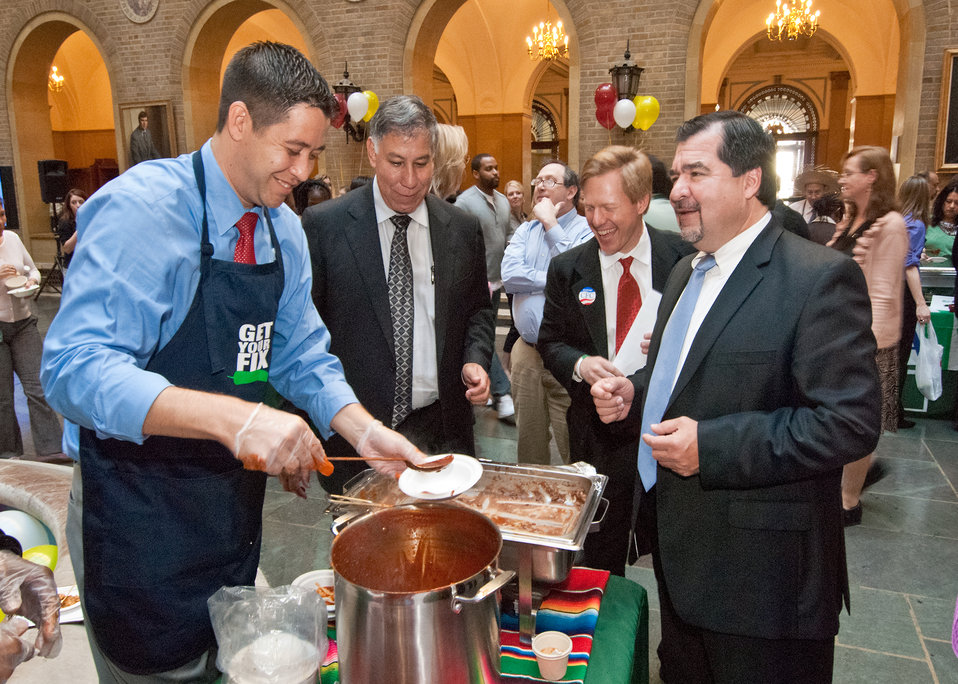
Russell Avalos, Ed Avalos, Undersecretary, Marketing and Regulatory, Max Finberg, Director, Center for Faith Based and Neighborhood Partnerships and Al Almonza, Administrator, Food Safety Inspection Service share a laugh at the U. S. Department of Agriculture Second Annual Chili Challenge Contest to celebrate Hispanic Heritage Month at USDA in Washington, DC, Thursday, October 6, 2011. Celebrity chefs and USDA employee chef volunteers used chili’s in delicious recipes to celebrate Hispanic cuisine. USDA’s traditional Chili Challenge trophy will be awarded to this year’s best-tasting chili. The judges for the challenge will be Chefs Toni Tipton-Martin, Chef Pedro Matamoros from 8407 Kitchen Bar, Corporate Executive Chef Lance Lemin, Krista Hardin, Chief of Staff and Undersecretary Avalos.